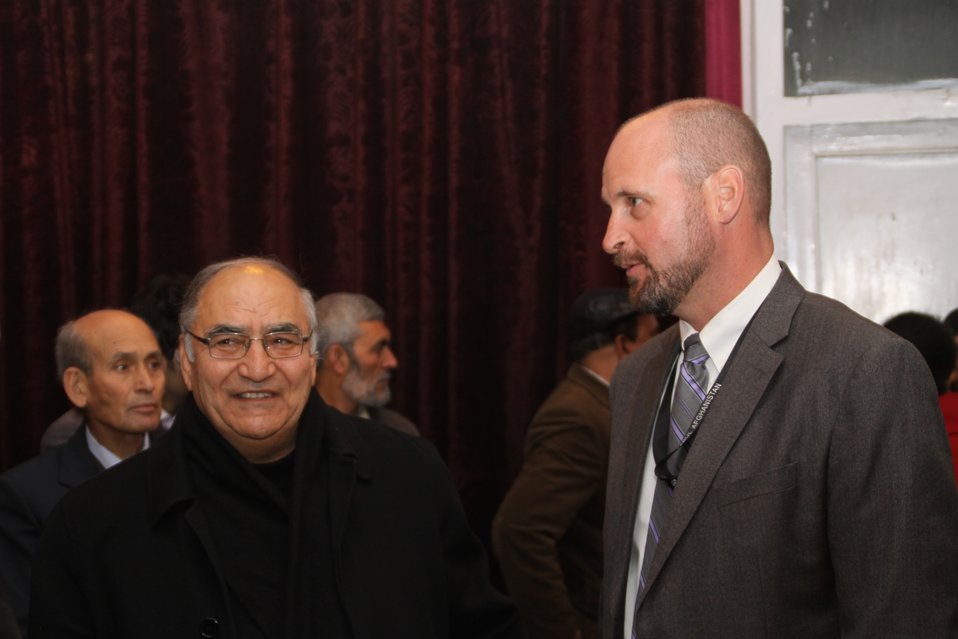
Dr. Shams and John Hansen